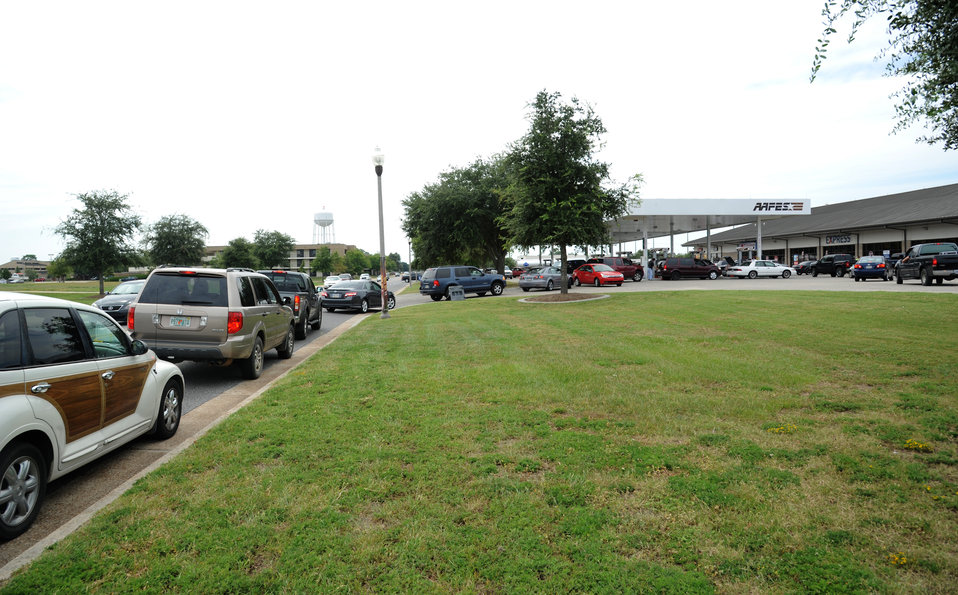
Keesler takes preventative measures to prepare for Isaac

8/28/2012 - People line up to fuel their vehicles at the Express Aug. 27, 2012, at Keesler Air Force Base, Miss. Keesler personnel are taking preventative measures to prepare and protect themselves and Keesler's assets as the base commander has declared HURCON 3, meaning destructive winds of 58 mph or greater are expected as Isaac approaches.